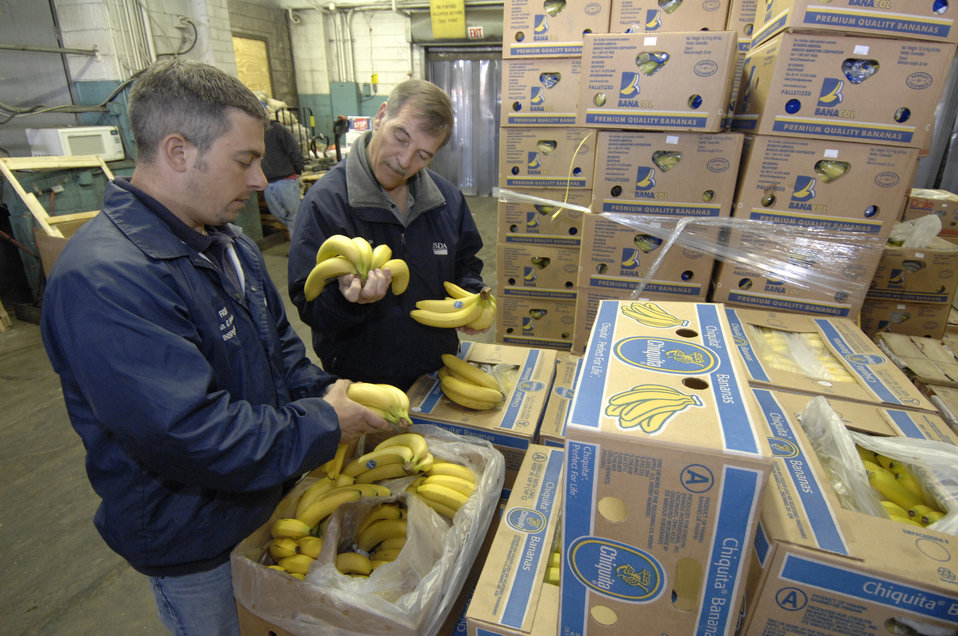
U. S. Department of Agriculture (USDA) Agricultural Marketing Service (AMS) inspectors Geno DeSanto and Bob Schofield examine bananas at the Philadelphia Food Distribution Center in Philadelphia, Pennsylvania on May 21, 2008.USDA photo.